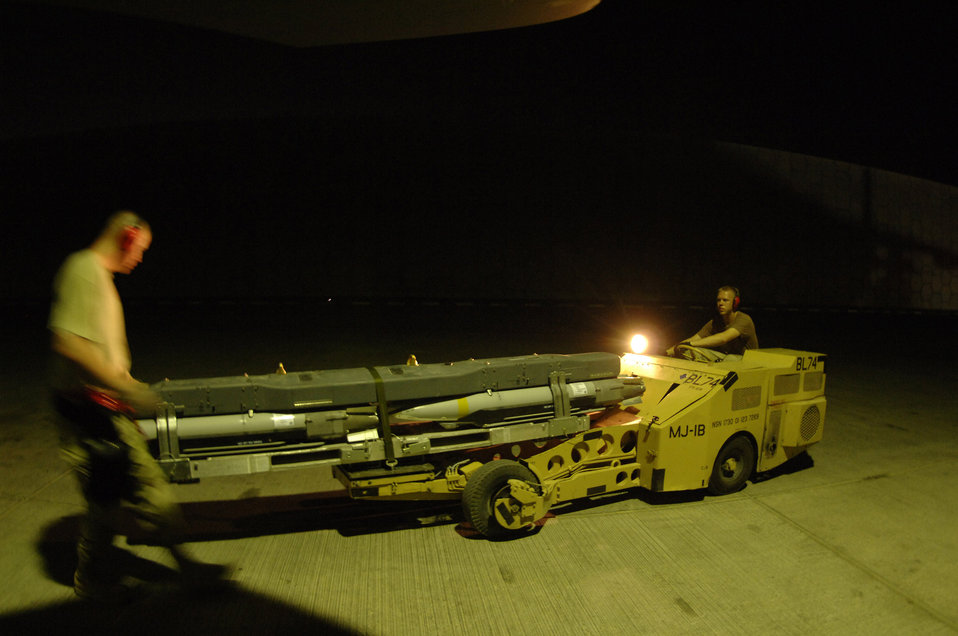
New weapon makes job of munitions specialists a 'snap'

Weapons loaders from the 379th Expeditionary Aircraft Maintenance Squadron move a weapons carriage with GBU-39/B small diameter bombs attached to an F-15E Strike Eagle for uploading. The jet flew the first sortie into combat carrying the new munition Oct 5. The Airmen are deployed from Royal Air Force Lakenheath, England.